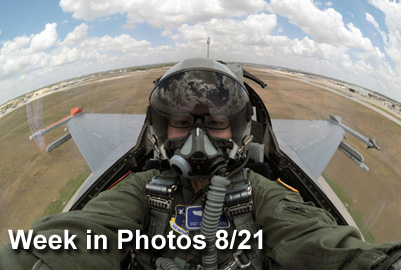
Week in Photos 8/21

Air Force Week in Photos for Aug. 21 highlights photos from around the Air Force. In this photo by Staff Sgt. Desiree N. Palacios, the aerial photojournalist takes a self portrait as an F-16 Fighting Falcon takes off on training mission in San Antonio.